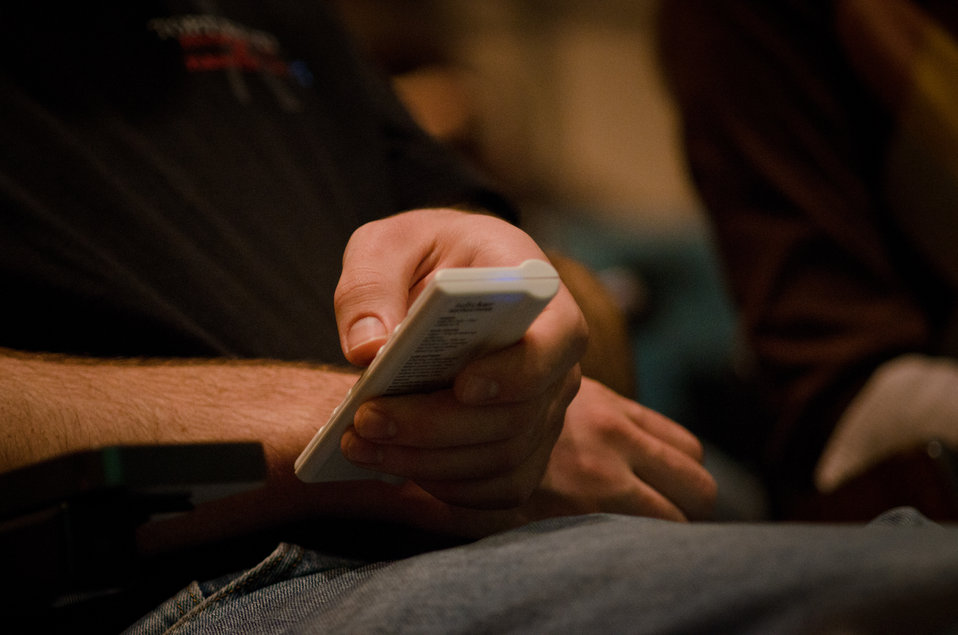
University of Maryland students in the audience used wireless polling devices during U.S. Department of Agriculture (USDA) Deputy Secretary Kathleen Merrigan presented the “Know your Farmer Know your Food” initiative to students and faculty at the Animal Sciences / Agricultural Engineering Building at the University of Maryland, in College Park, MD, on Thursday, April 7, 2011. Deputy Secretary Merrigan’s interactive presentation utilized wireless polling in the lecture room to present questions to the audience who used handheld devices to choose from a list of multiple answers. Their answers were instantly tabulated, then Merrigan revealed their top choice on the screen, followed by the correct answer, usually revealing an error and misconceptions. Her talk covered support of local farmers; strengthening rural communities, promoting healthy eating, protecting natural resources; grants, loans and other support USDA provides as well as stories of innovation; industry and government cooperation; and careers opportunities in agriculture, ranching and the USDA.